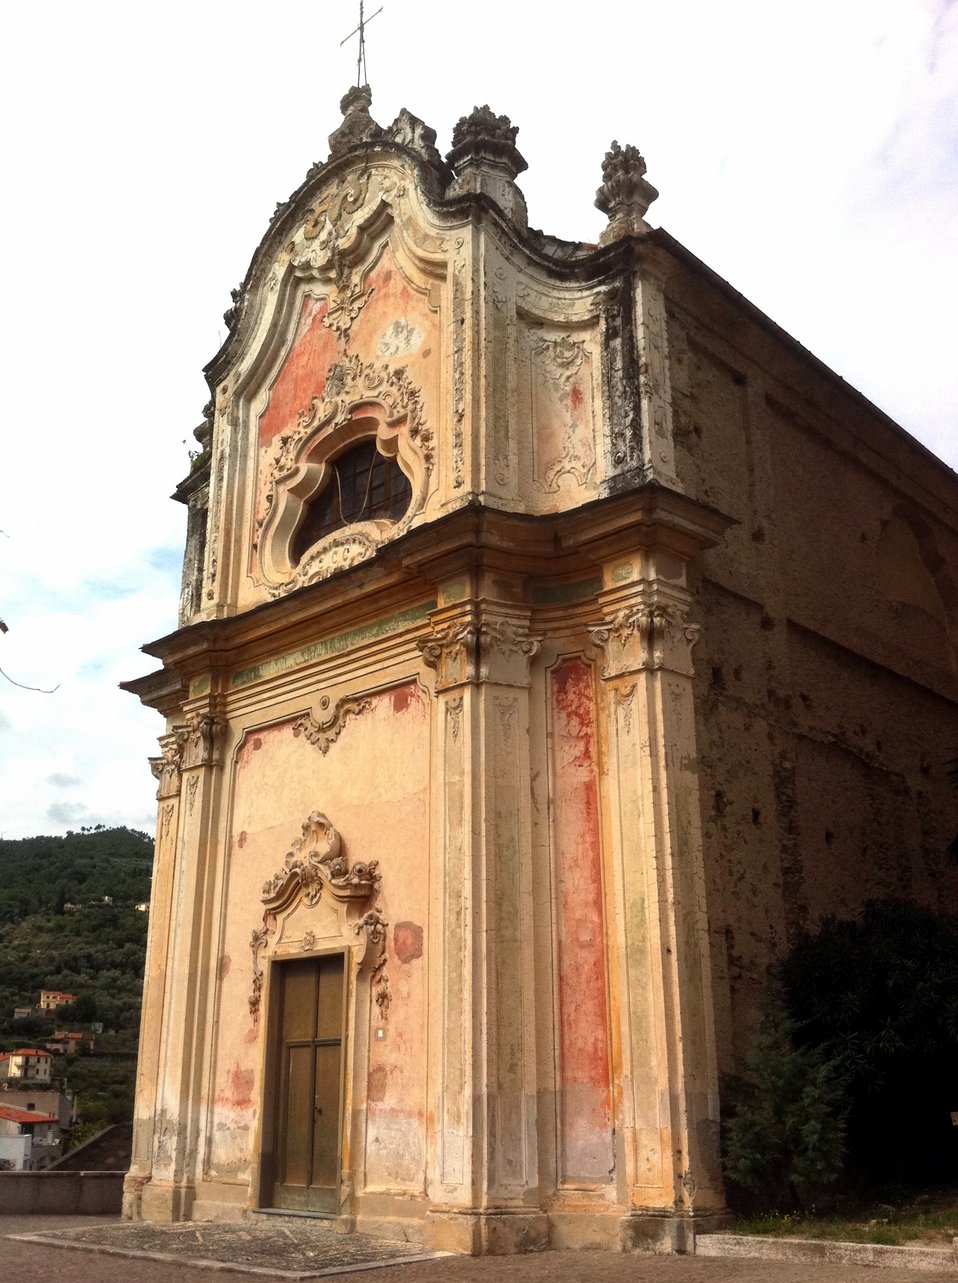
Italiano: Oratorio di San Carlo, Calice Ligure (SV) Italy